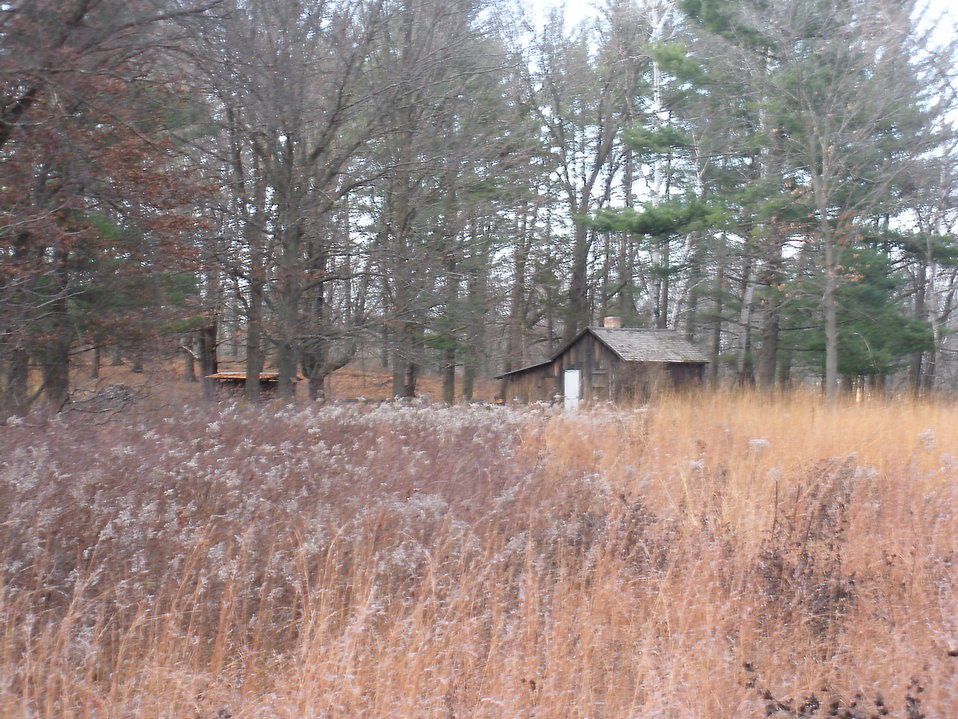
Shack Shot 5

The land surrounding the Shack and farm provides a living classroom for exploring dynamic ecological relationships. Each year, thousands of visitors are inspired through tours, seminars, and workshops in the same landscape that deeply moved Leopold. (via www.aldoleopold.org/)